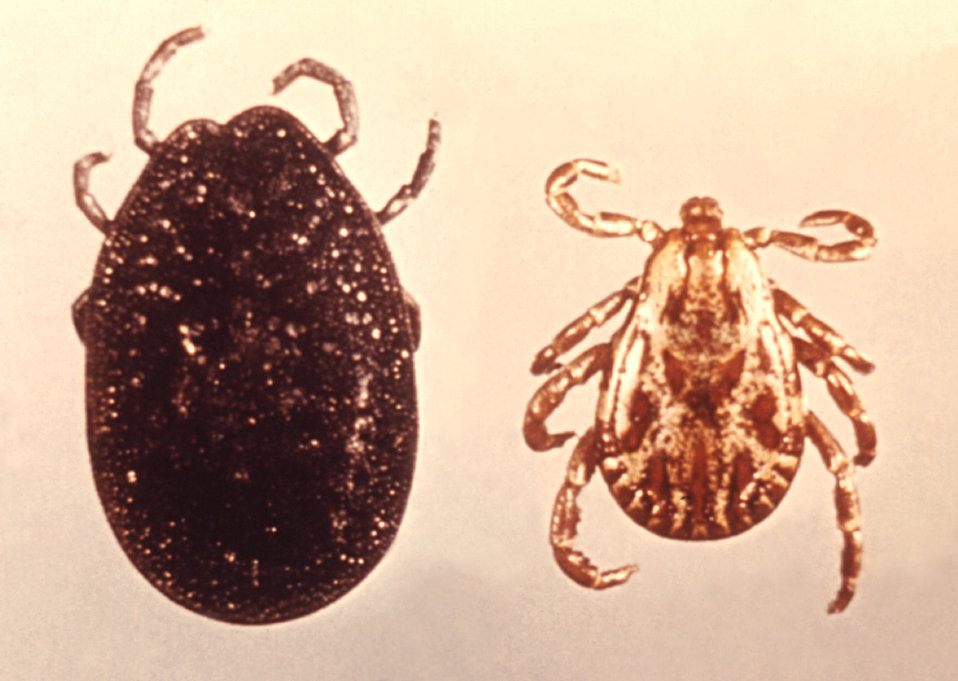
These two North American ticks represent the Argasidae 'soft ticks' (Lt), and the Ixodidae 'hard ticks' (Rt).